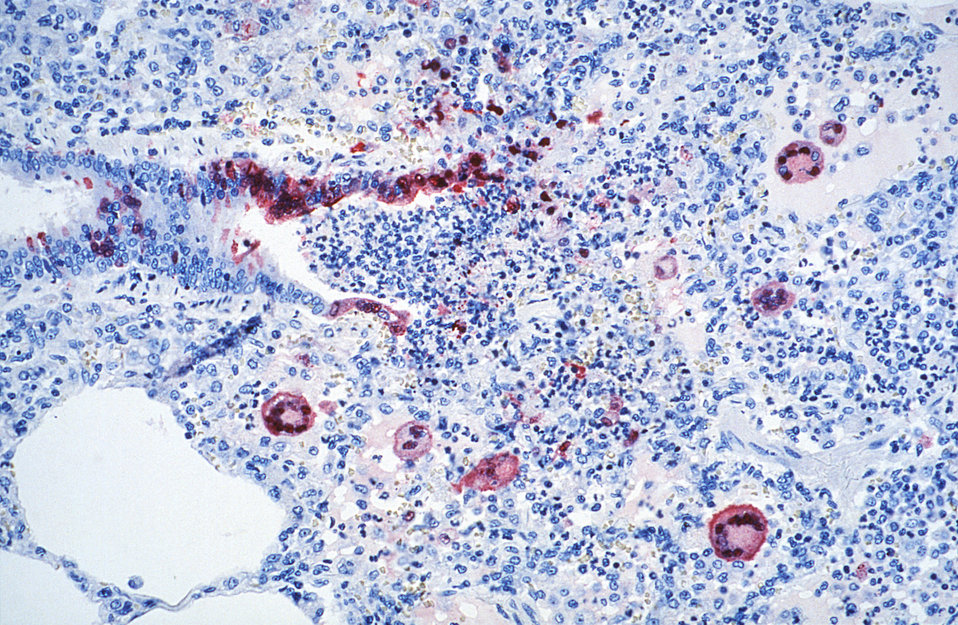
Using immunohistochemical (IHC) technique, this photomicrograph revealed histopathologic changes in a sample of lung tissue from an unknown animal, which included the trachea, i.e., windpipe, and bronchiae, i.e., airways within the lung, brought on due to a Nipah virus infection.